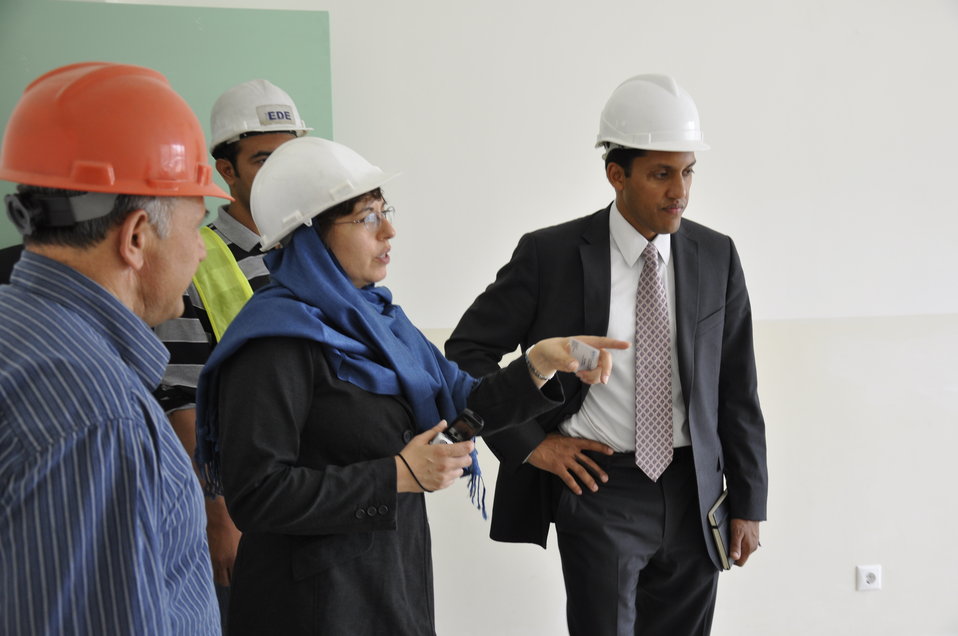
Ghazni High School in Kabul